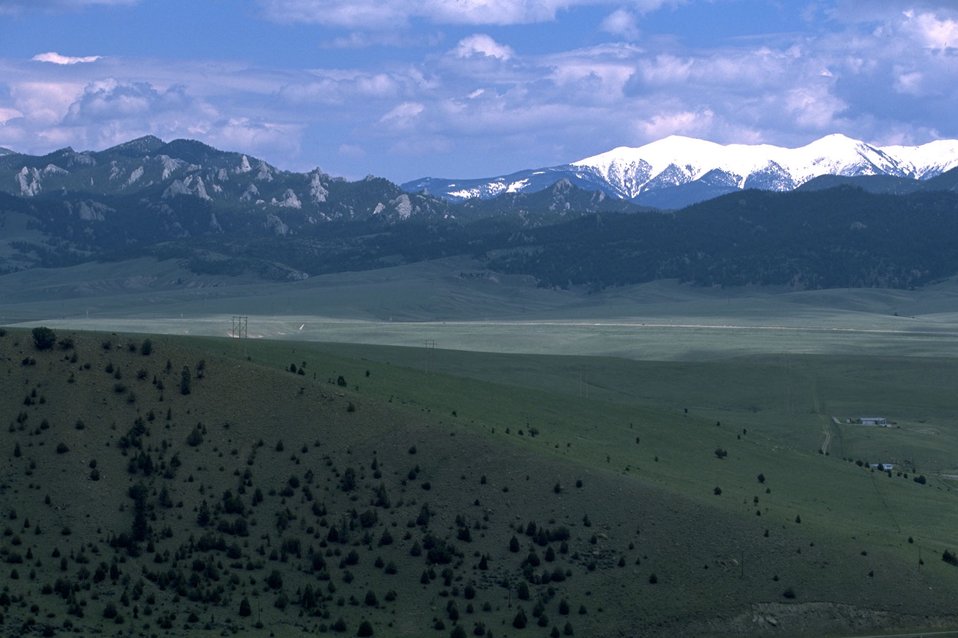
View to Humbug Spires WSA